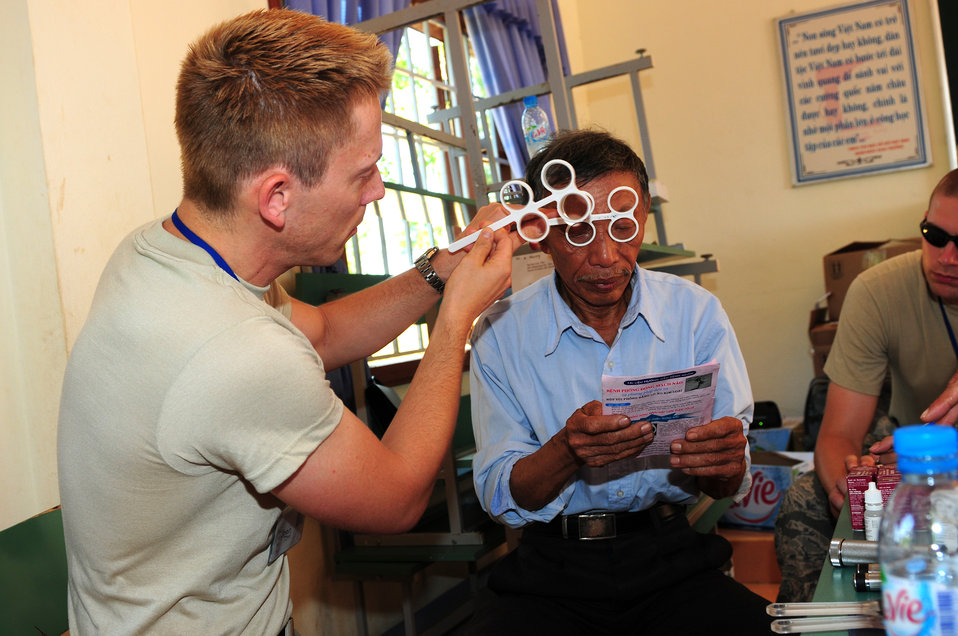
Pacific Angel optometry team provides vision in Vietnam

Maj. (Dr.) Steven Tittl examines the eyes of a Vietnamese man Sept. 18, 2009, in Quang Tri Province, Vietnam. Doctor Tittl and other Air Force members are participating in Operation Pacific Angel 2009 Sept. 15 through 24 to provide humanitarian assistance in cooperation with local authorities to Quang Tri Province residents. Doctor Tittl is an optometrist assigned to the 439th Aerospace Medicine Squadron at Westover Air Reserve Base, Mass.